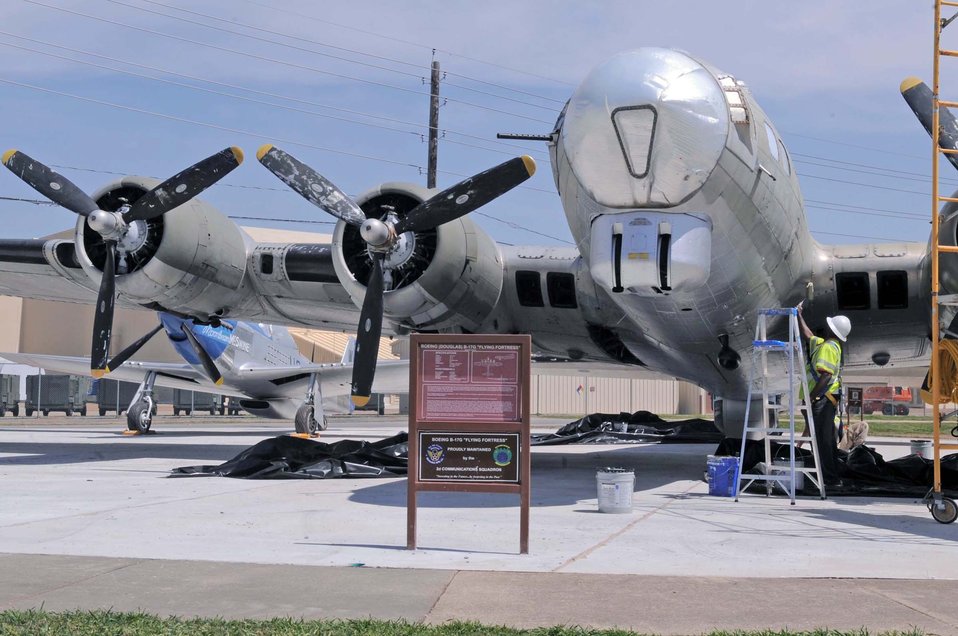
Barksdale Airmen restore B-17G for 8th Air Force museum

This B-17G static display honors Maj. Gen. Lewis E. Lyle at the 8th Air Force Museum April 5, 2010, at Barksdale Air Force Base, La. Barksdale AFB Airmen, volunteers and contractors are in the process of restoring the B-17 and painting it to resemble one that was flown by General Lyle on a bombing mission during World War II.